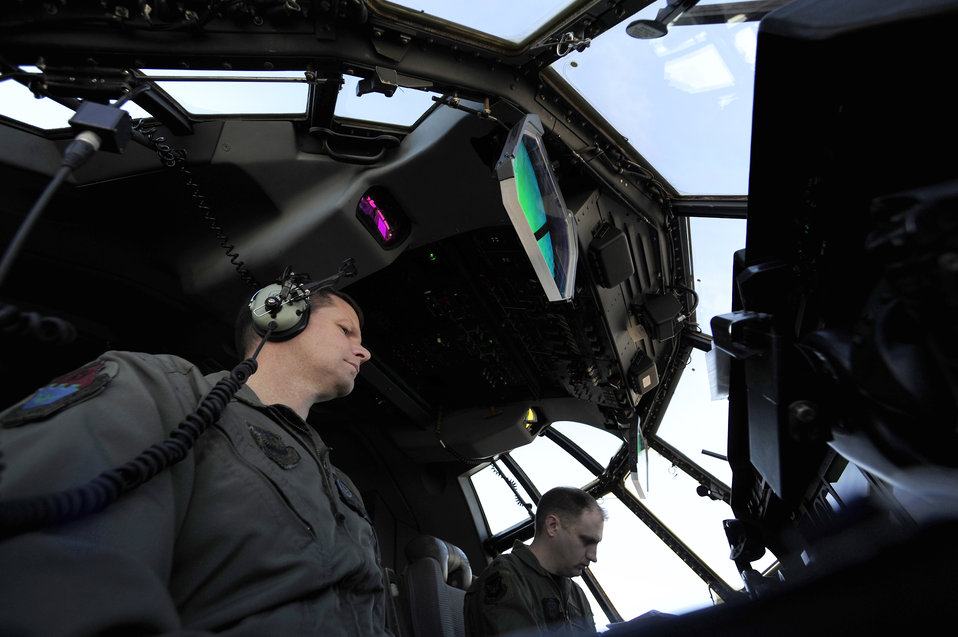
First MC-130J training program takes flight

Lt. Col. Michael Watson and Maj. Andrew Jennings go through a startup check list on an EC-130J Commando Solo Feb. 11, 2011, at the Harrisburg International Airport, Pa. Class 1101 is the first group of students to attend mission qualification training for the EC-130J that will replace all the E- and P-model aircraft within the next few years. The EC-130J is equipped with modern avionics and mission systems. It is expected to provide specialized mobility to combatant commanders. Colonel Watson and Major Jennings are Air Force Special Operations Training Center student pilots.